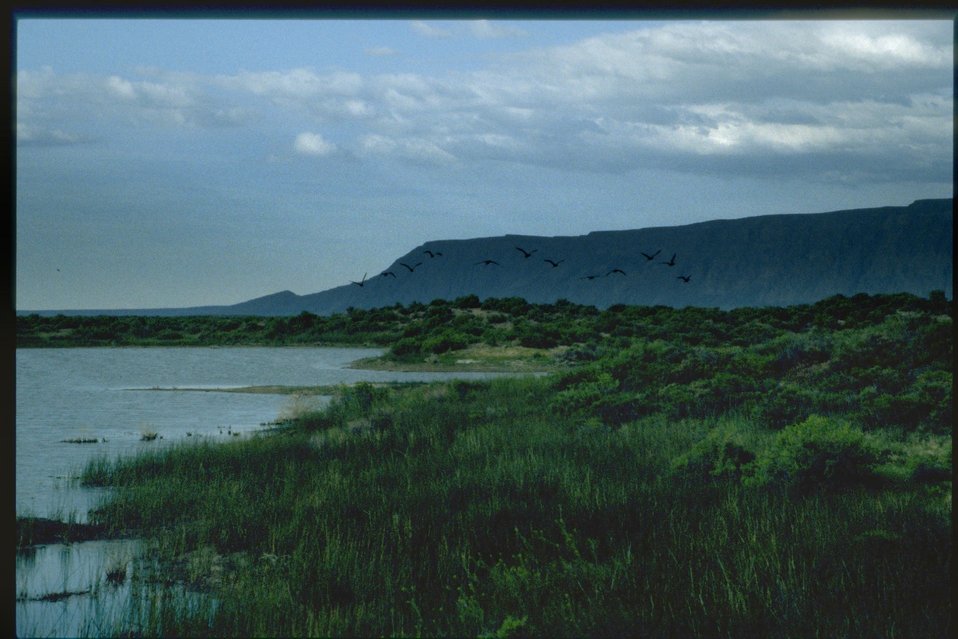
Warner Wetlands.